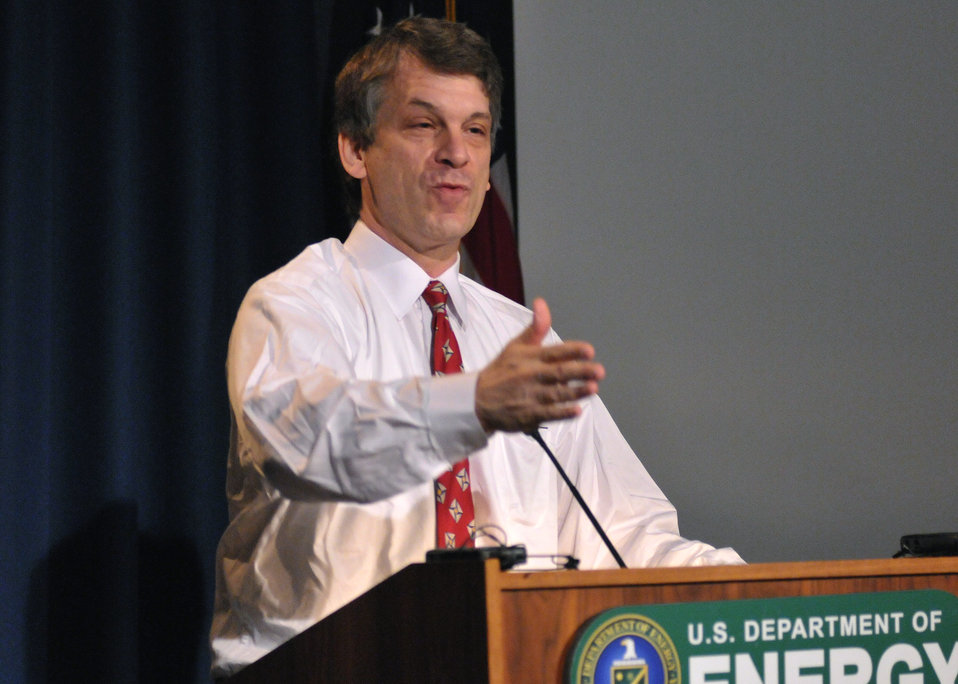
David Sandalow